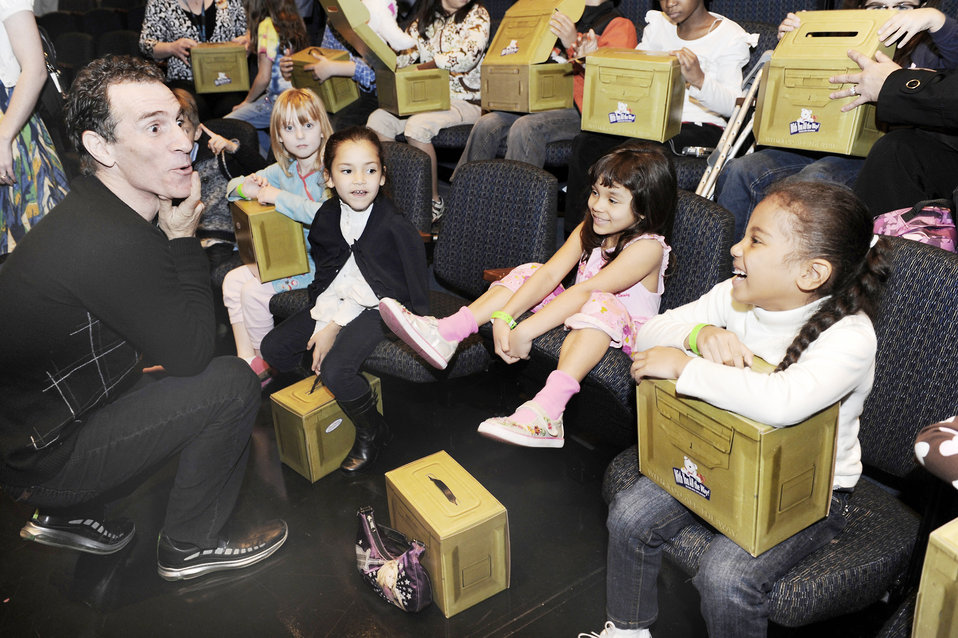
New DVD helps children deal with deployment

Trevor Romain, award-winning author and children's books illustrator, jokes with military children after a USO-sponsored film screening of the DVD